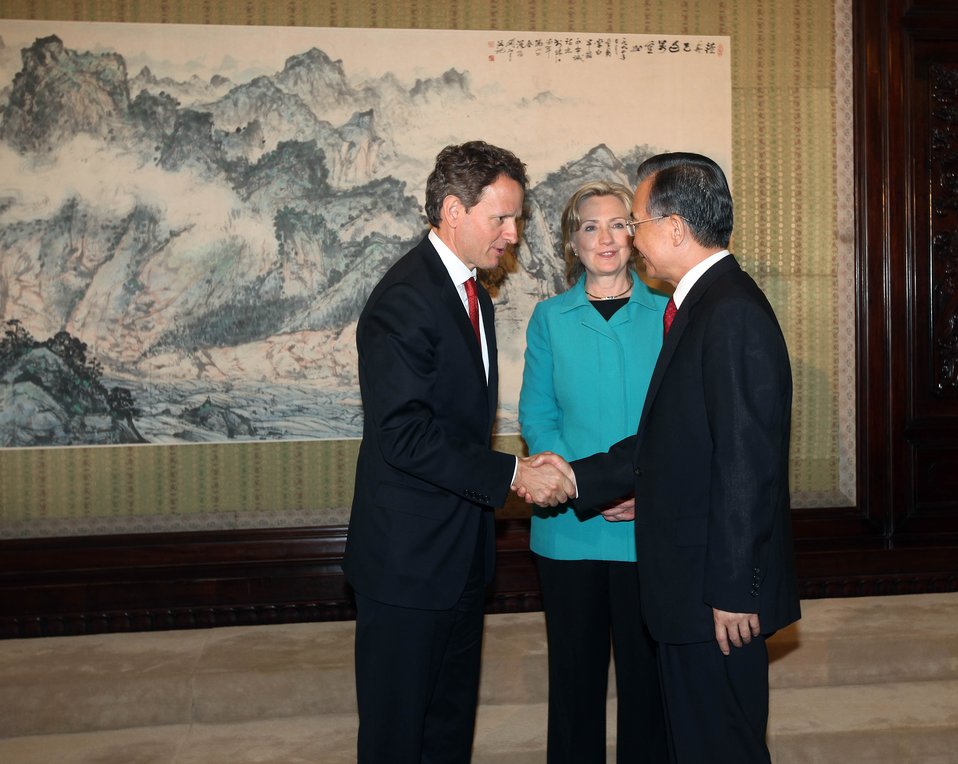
SandED 5/25/10

Premier Wen Jiabao greets Secretary Geithner at the Zhongnanhai in Beijing.